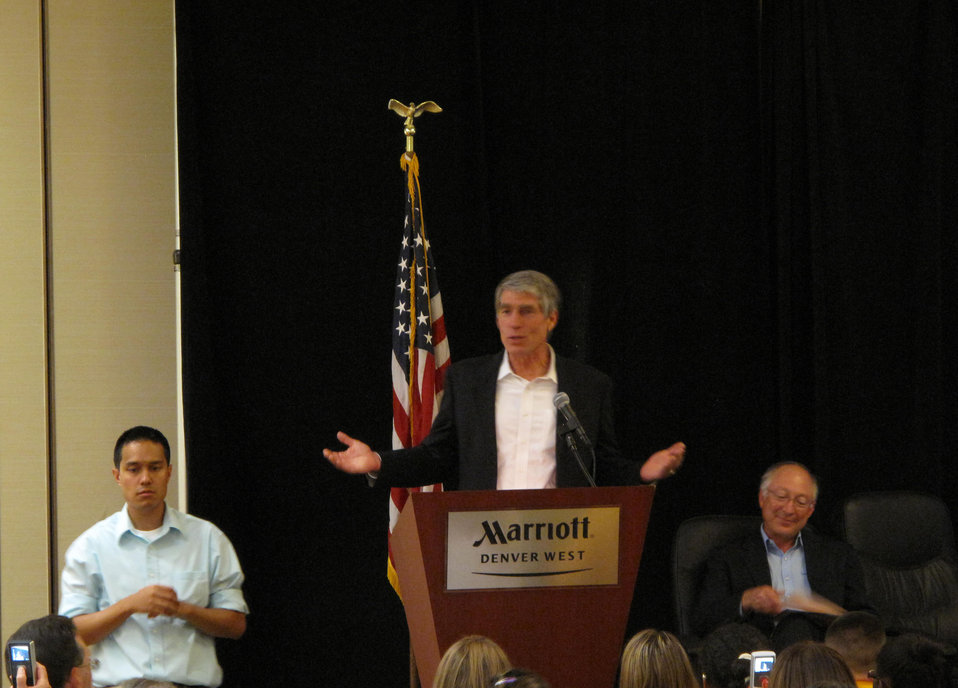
America's Great Outdoors Initiative

Senator Udall promotes getting outside in Colorado.